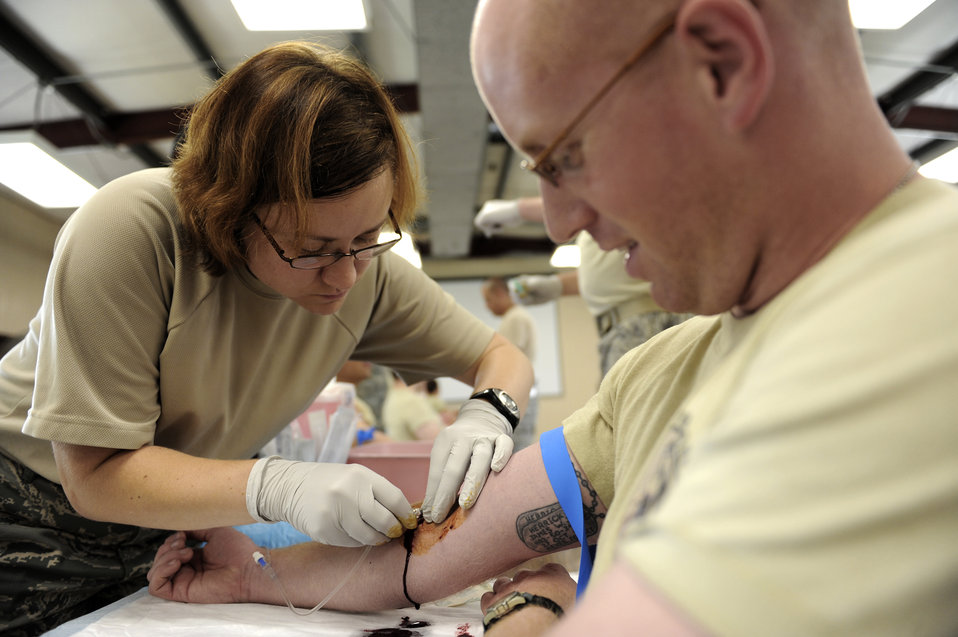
Combat Skills Training

Staff Sgt. Michelle Hess initiates an intravenous infusion on Tech. Sgt. John Herrick during the combat lifesavers course at Fort Dix, N.J., July 29. Combat skills training is a month-long Army training program that prepares Airmen for Joint Expeditionary Tasking combat roles augmenting the U.S. Army. Sergeant Hess is assigned to the National Air and Space Intellegence Center at Wright-Patterson Air Force Base, Ohio, and Sergeant Herrick is assigned to the 4th Combat Camera Squadron at March Air Reserve Base, Calif.